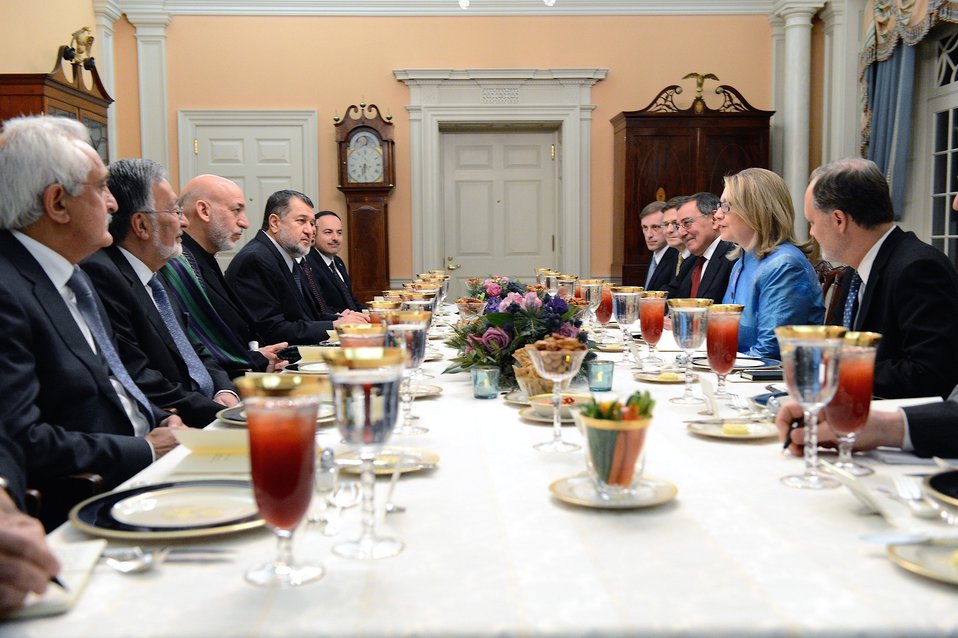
Secretary Clinton Hosts a Working Dinner for President Karzai

U.S. Secretary of State Hillary Rodham Clinton hosts a working dinner for Afghan President Hamid Karzai at the U.S. Department of State in Washington, D.C., January 10, 2013.